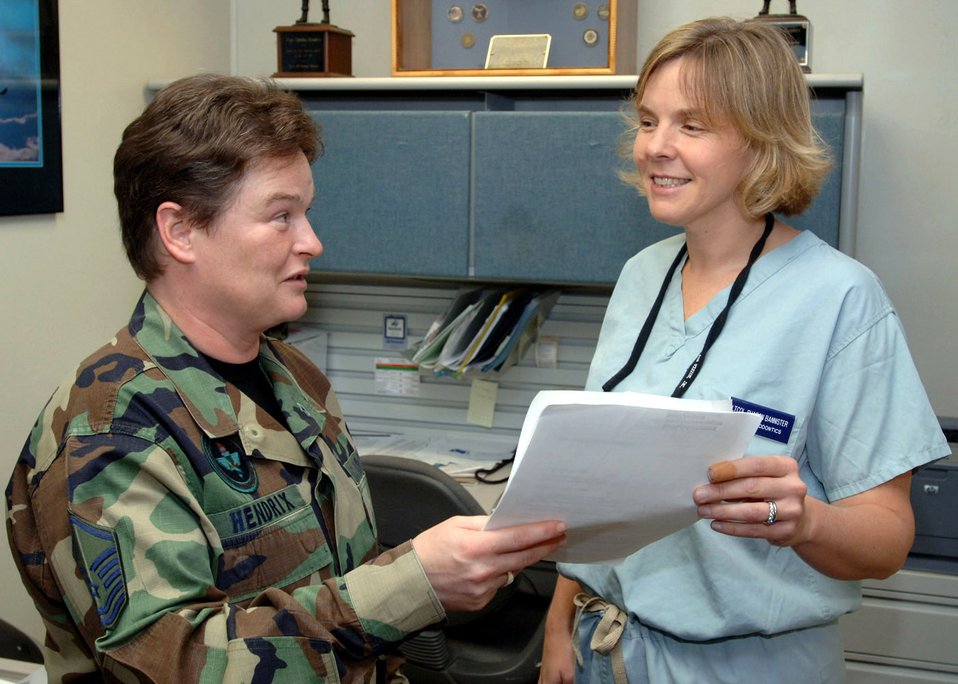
Airman chosen as Child Advocate of Year

Master Sgt. Tabitha Hendrix and Lt. Col. Sharon Bannister discuss the daily patient roster at MacKown Dental Clinic April 24 at Lackland Air Force Base, Texas. Sergeant Hendrix was honored as the Child Advocate of the Year by the Child Advocates of San Antonio. Sergeant Hendrix is the NCO in charge of the Periodontics Flight, and Colonel Bannister is the deputy flight commander.